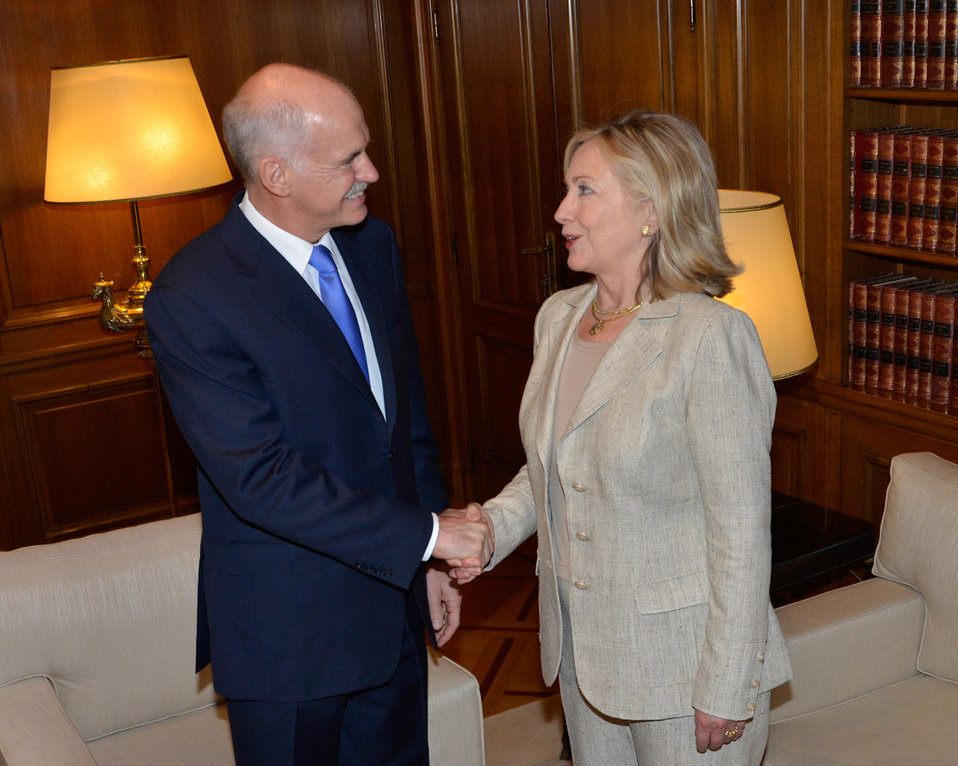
Secretary Clinton Shakes Hands With Greek Prime Minister Papandreou

U.S. Secretary of State Hillary Rodham Clinton shakes hands with Greek Prime Minister George Papandreou in Athens, Greece, on July 17, 2011.